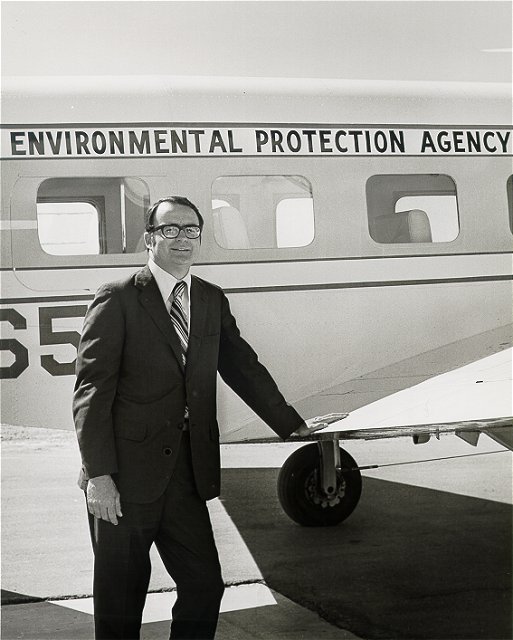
Air quality tour

Administrator William Ruckelshaus on a tour of the Four Corners Air Quality Region by EPA airplane.